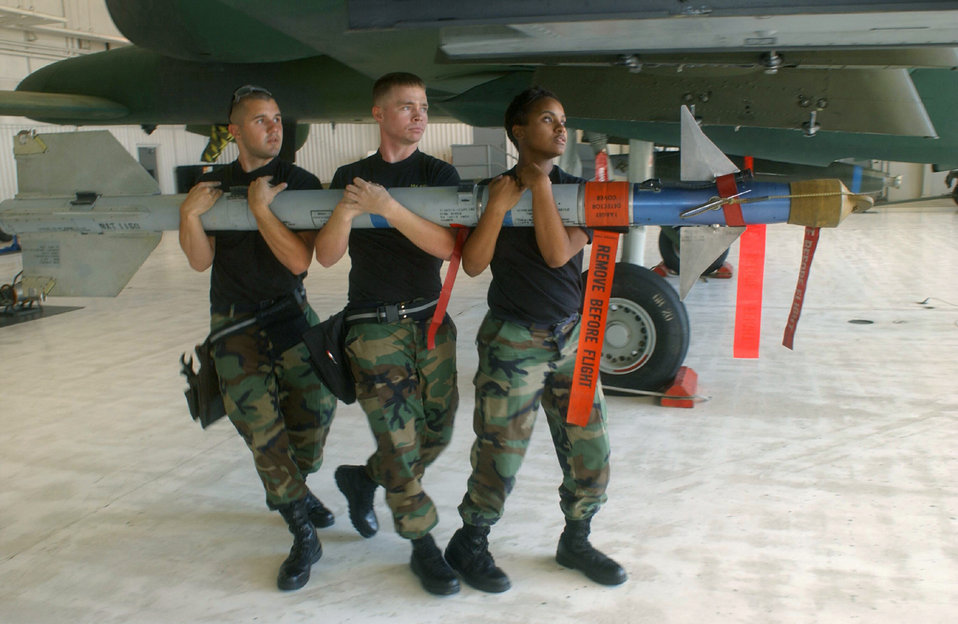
Load lovers

DAVIS-MONTHAN AIR FORCE BASE, Ariz. -- (From left) Airman 1st Class Jesse Tyson, Staff Sgt. Kelly Evans and Airman 1st Class Ebony Calhoun carry an AIM-9 Sidewinder to an A-10 Thunderbolt II aircraft where it will placed during a weapons load crew competition here. The Airmen are assigned to the 355th Aircraft Maintenance Squadron.